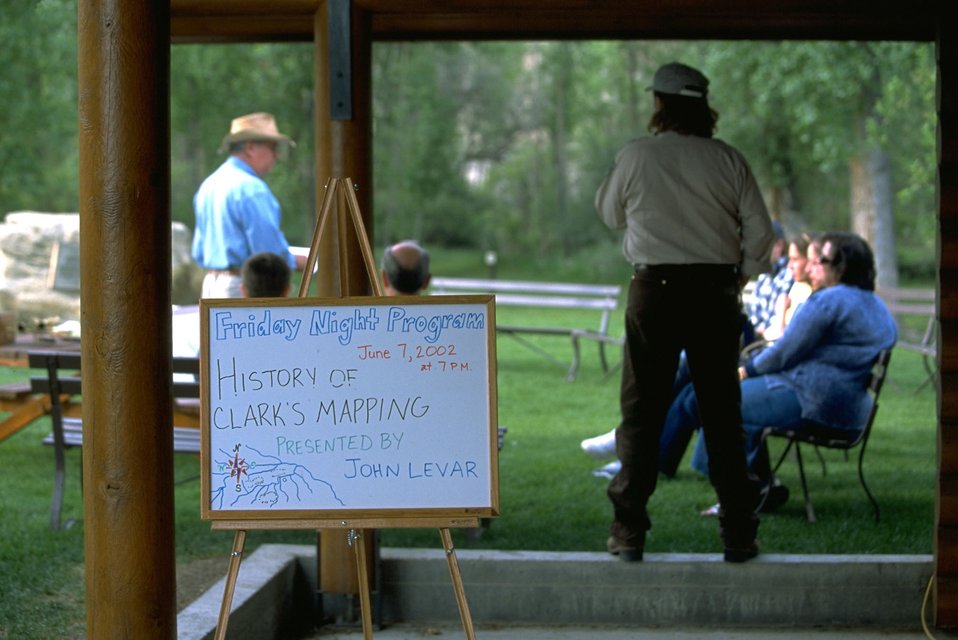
Pompeys Pillar Visitor Center back lawn area. Interpretative program in progress on mapping by Captain William Clark, presented by John Levar